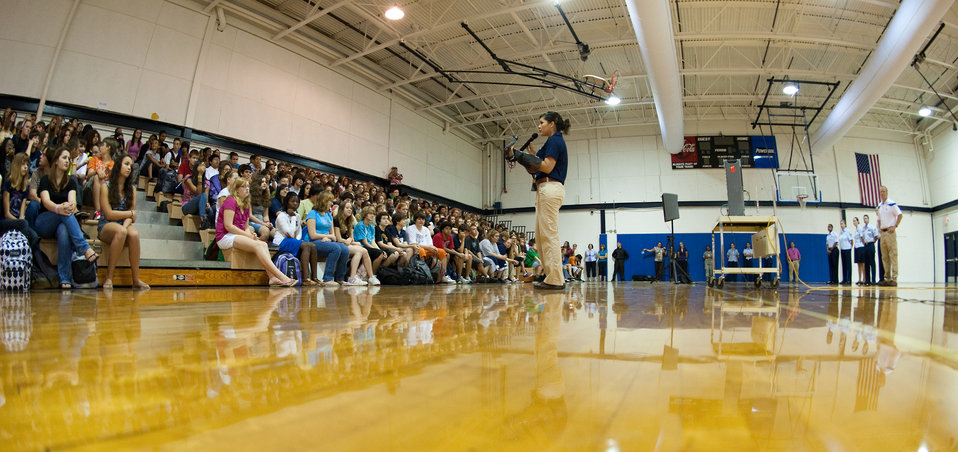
Small kestral captures school's attention

Cadet 3rd Class Danielle Cortez and